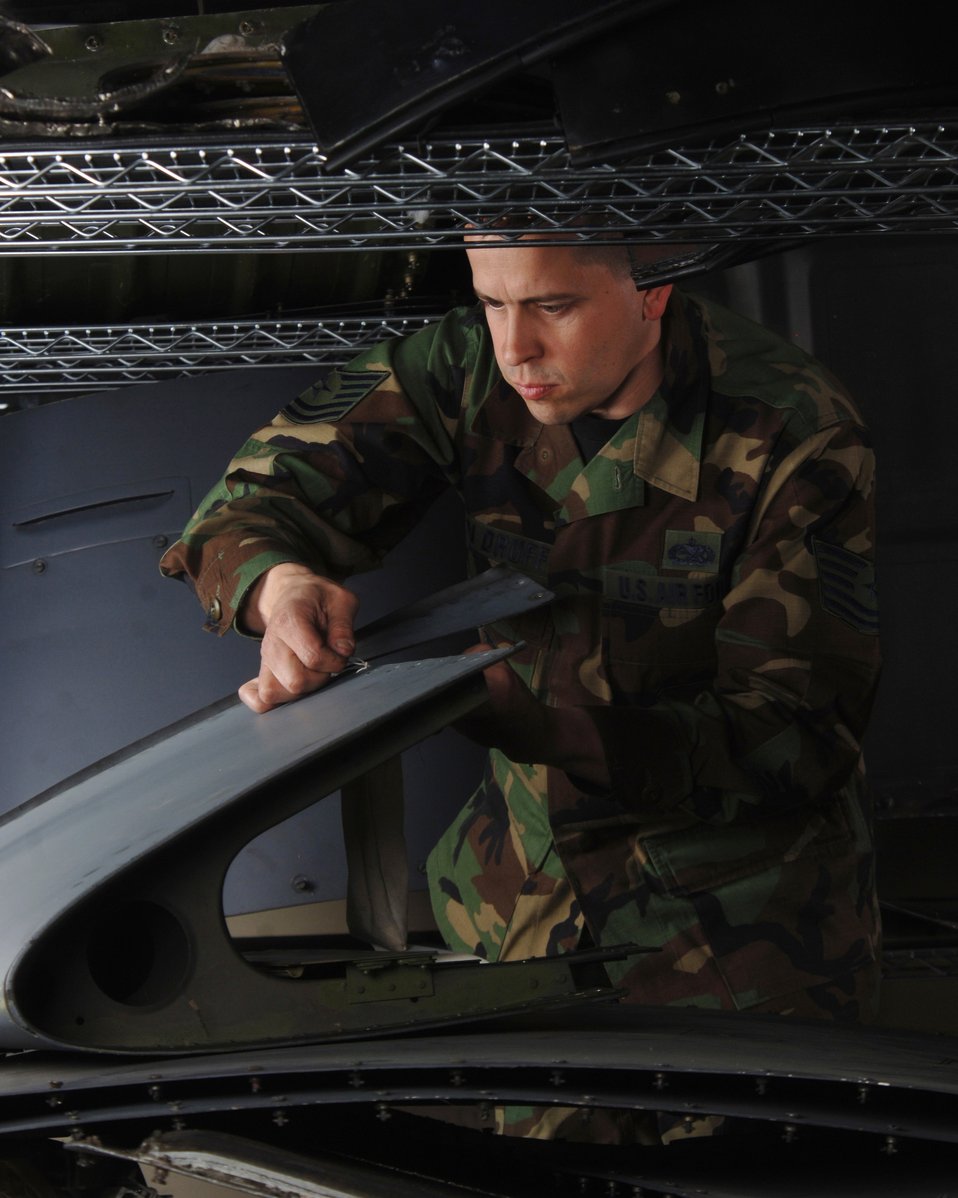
Herc check-up

Tech. Sgt. Mark Van Druff looks for corrosion, deformities and broken rivets on a C-130 Hercules wing panel during an inspection at Yokota Air Base, Japan, on Tuesday, April 25, 2006. Sergeant Van Druff is an aircraft mechanic with the 374th Maintenance Squadron.